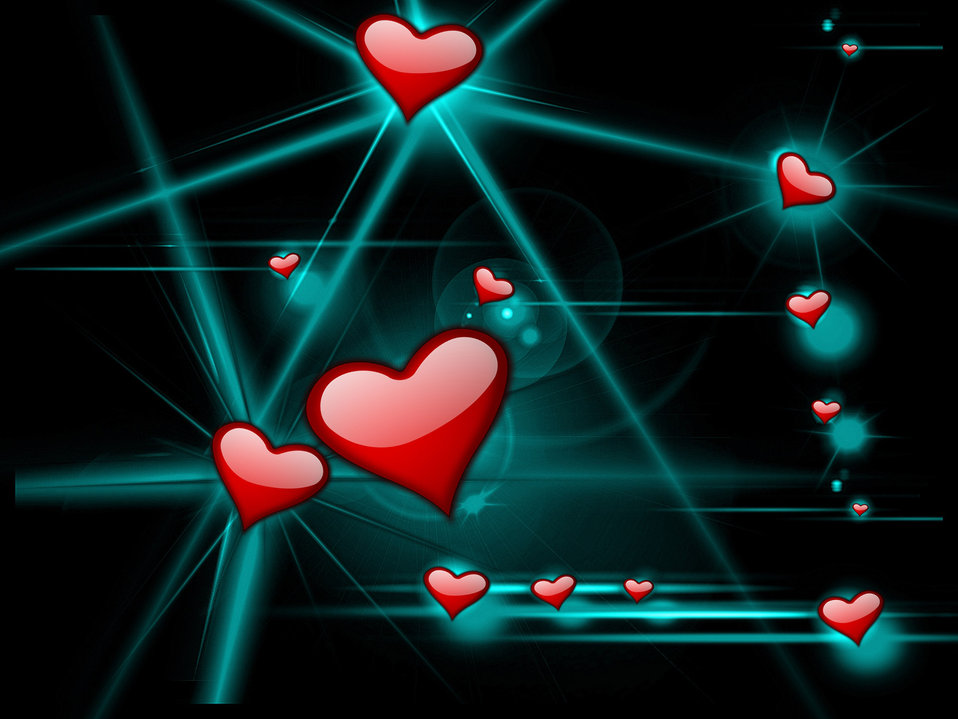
Background 516

Love background.